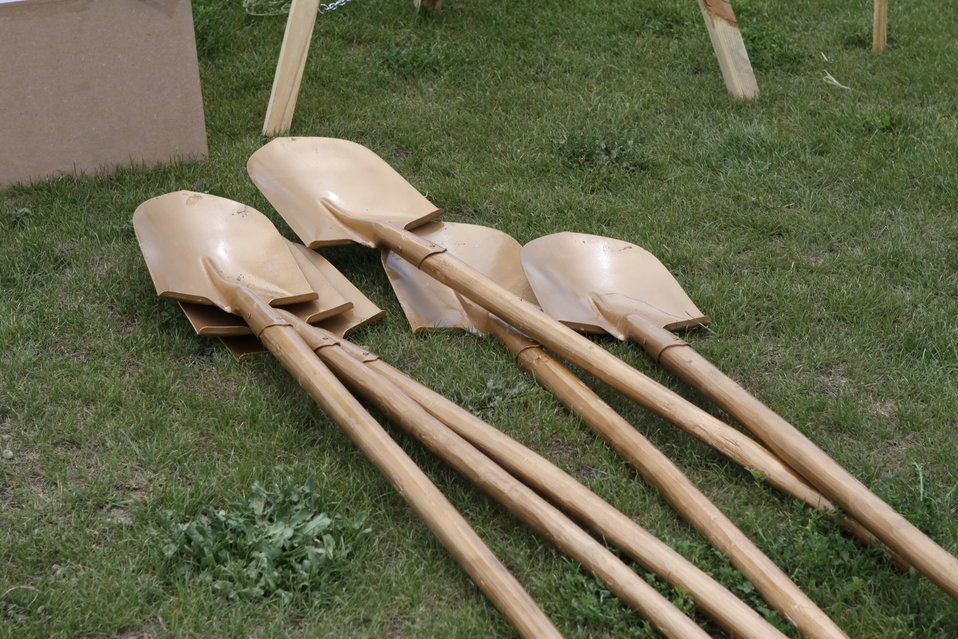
100526 AUAF Graduation 394